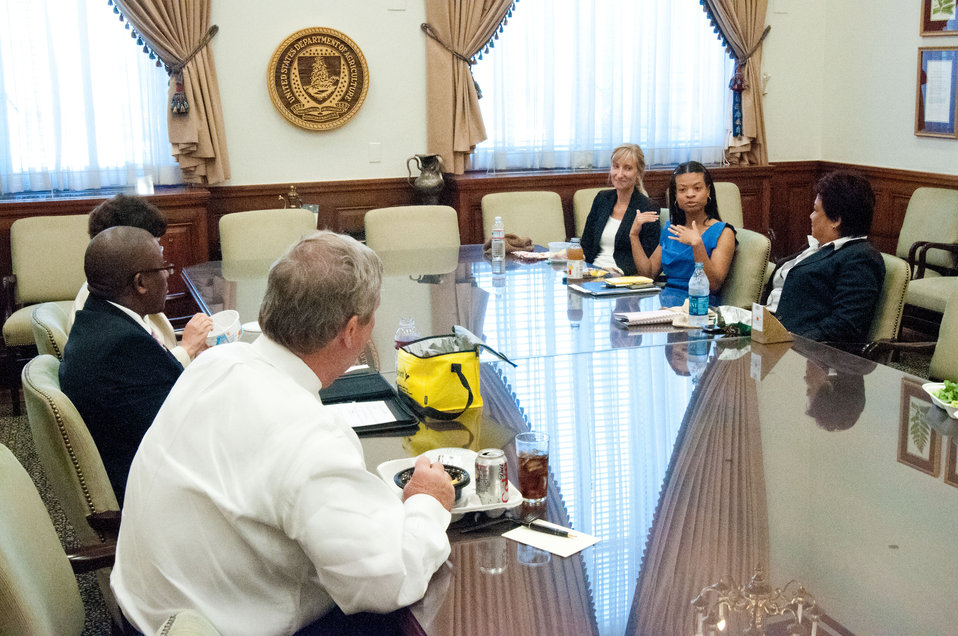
Agriculture Secretary Tom Vilsack met with United States Department of Agriculture employees for a Brown Bag lunch to thank them for their dedication and diligence in Washington, D.C., on Wednesday, July 25, 2012. From left: Agriculture Secretary Tom Vilsack, Tony Myers, Departmental Management, Krysta Hardin, Chief of Staff, Rebecca Shively, Farm Services Agency, Janel Barsi, Animal and Plant Health Inspection Service, Marian Romero, Departmental Management.